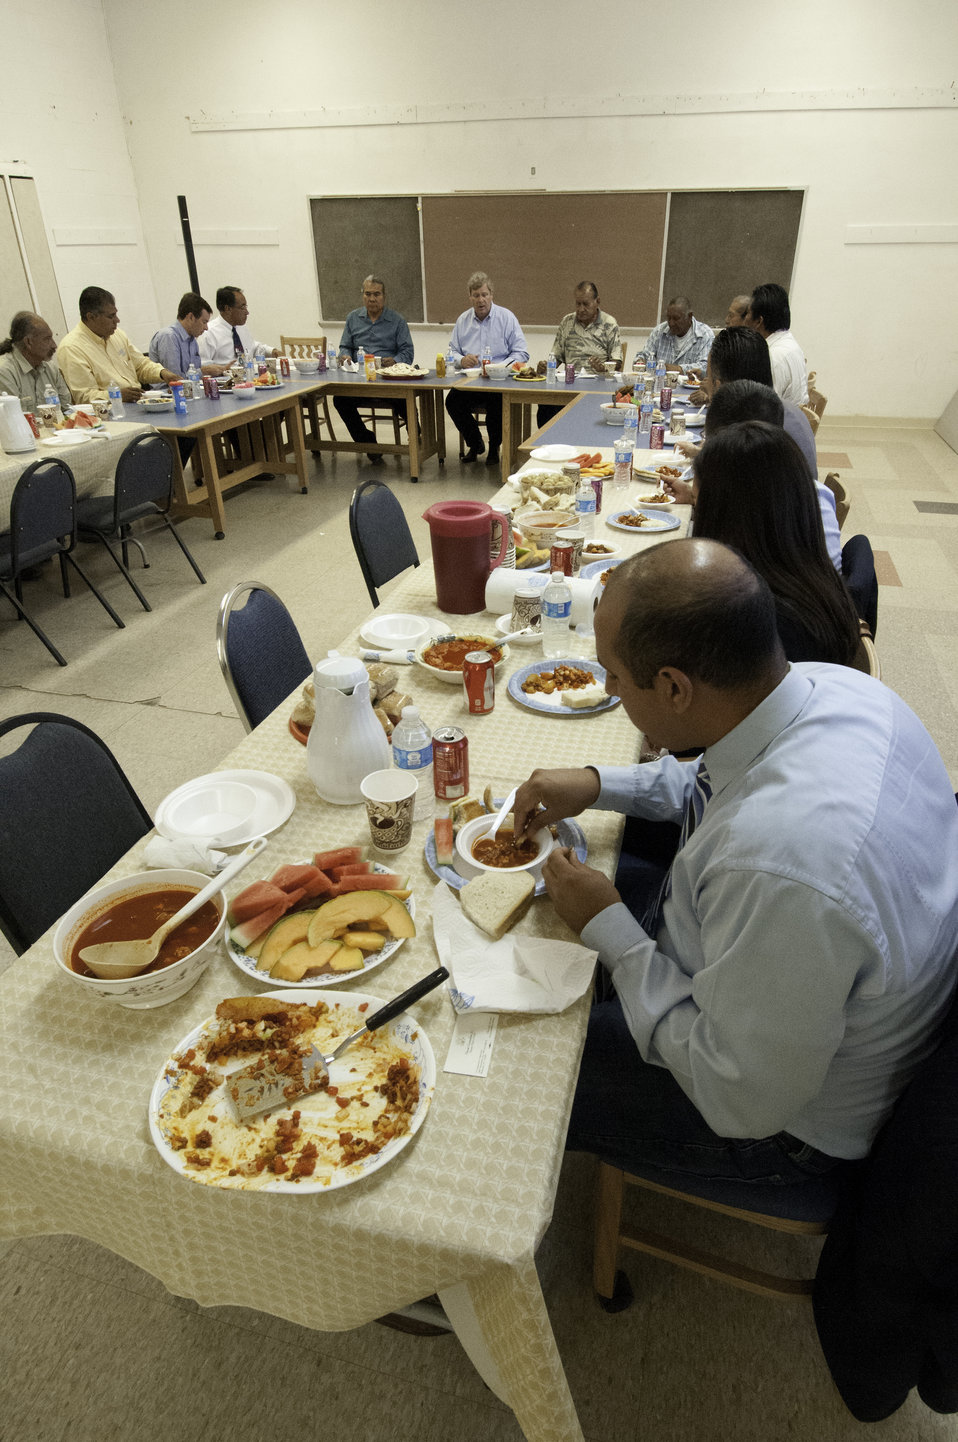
Agriculture Secretary Tom Vilsack meets with New Mexico producers and community stakeholders to highlight the U.S. Department of Agriculture’s (USDA) StrikeForce Initiative opportunities and the importance of comprehensive immigration reform in Albuquerque, NM on Thursday, Jun. 20, 2013.